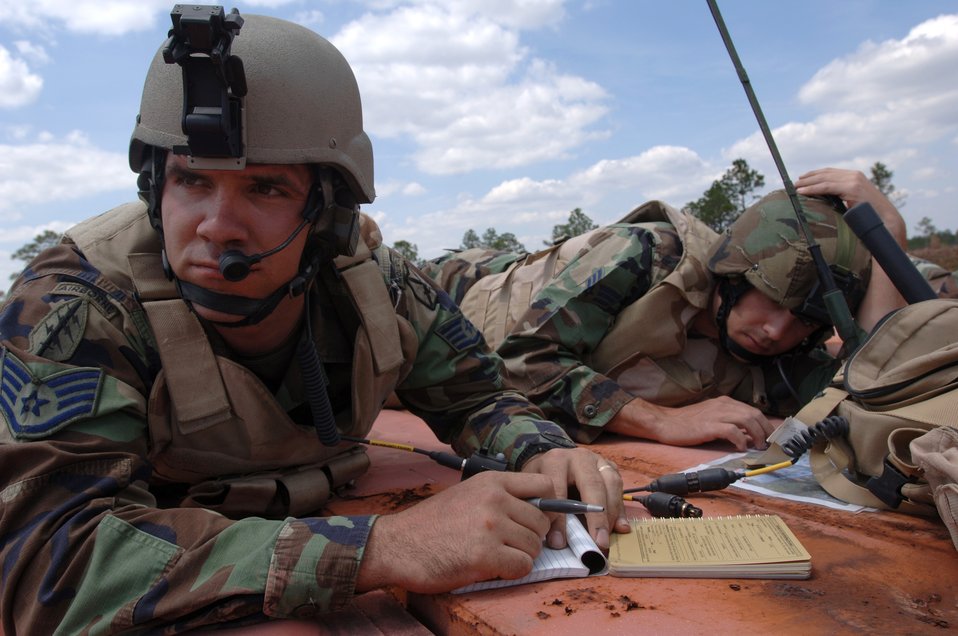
Atlantic Strike III

Staff Sgt. Brandon Peterson (left) and Senior Airman Robert Ellis, joint terminal attack controllers with the 21st Air Support Operation Squadron at Wheeler Army Air Field, Hawaii, coordinate air operations during Atlantic Strike III at Avon Park, Fla., on Thursday, March 30, 2006.